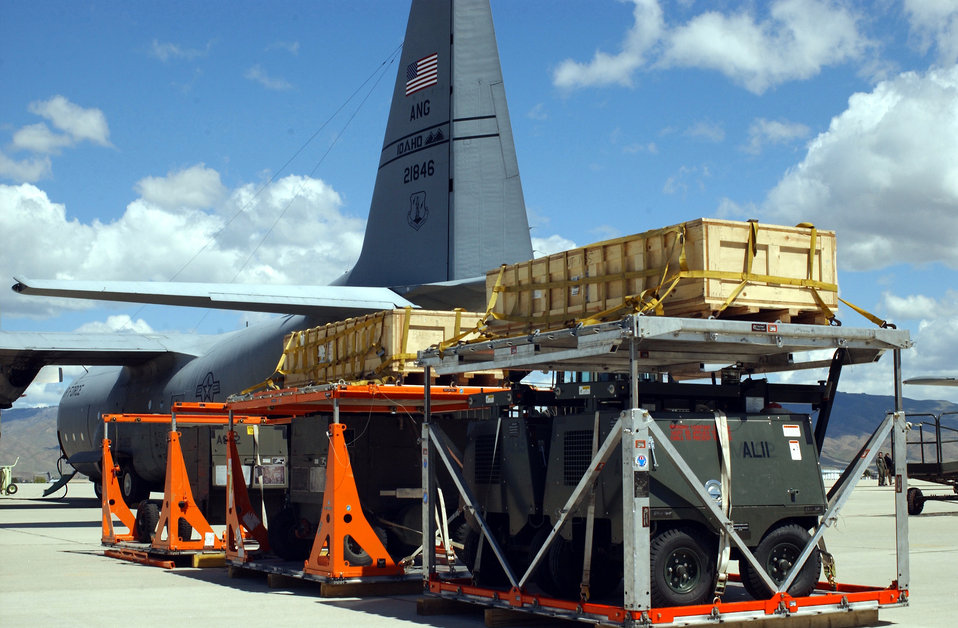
Stackable pallets

GOWEN FIELD, Idaho -- The Air Expeditionary Force Battlelab's bilevel aircraft loading system could make Air Force transport aircraft about 10 percent more efficient by reducing the number of aircraft normally required for a typical air and space expeditionary force rotation, officials say. This new pallet system was being tested aboard a C-130 Hercules from the Idaho Air National Guard's 189th Airlift Squadron here.